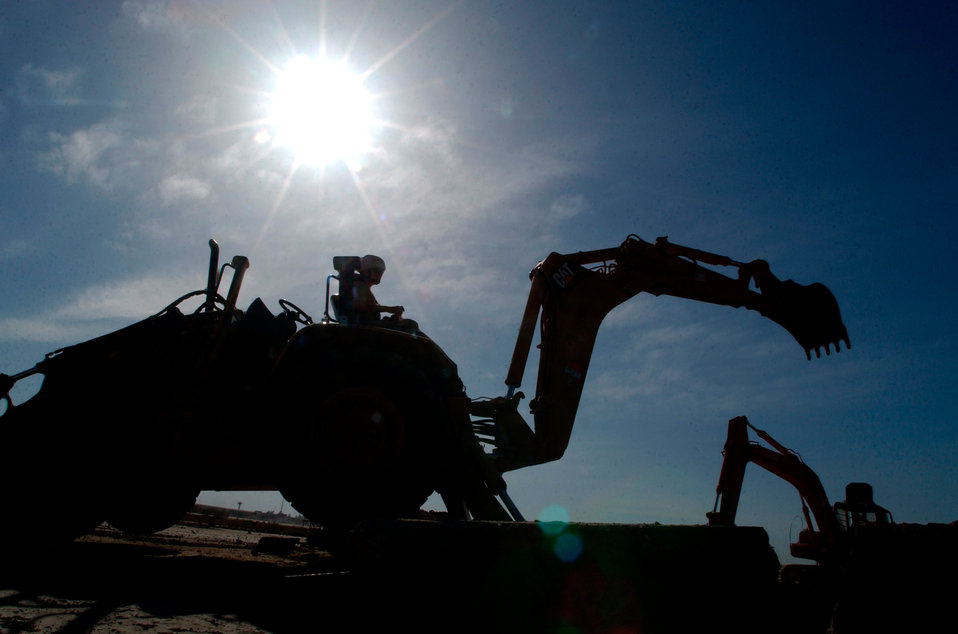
Digging time

OPERATION IRAQI FREEDOM -- Members of the 823rd Airborne RED HORSE move huge pieces of concrete from the military runway at Baghdad International Airport on April 18, 2003. REDHORSE members are currently repairing damage to the civilian and military runways at Baghdad International Airport that occurred during Operation Iraqi Freedom. Baghdad International Airport is a primary base of operations for U.S. troops, cargo and humanitarian airlift for Operation Iraqi Freedom. Operation Iraqi Freedom is the multinational coalition effort to liberate the Iraqi people, eliminate Iraq's weapons of mass destruction and end the regime of Sadaam Hussein.